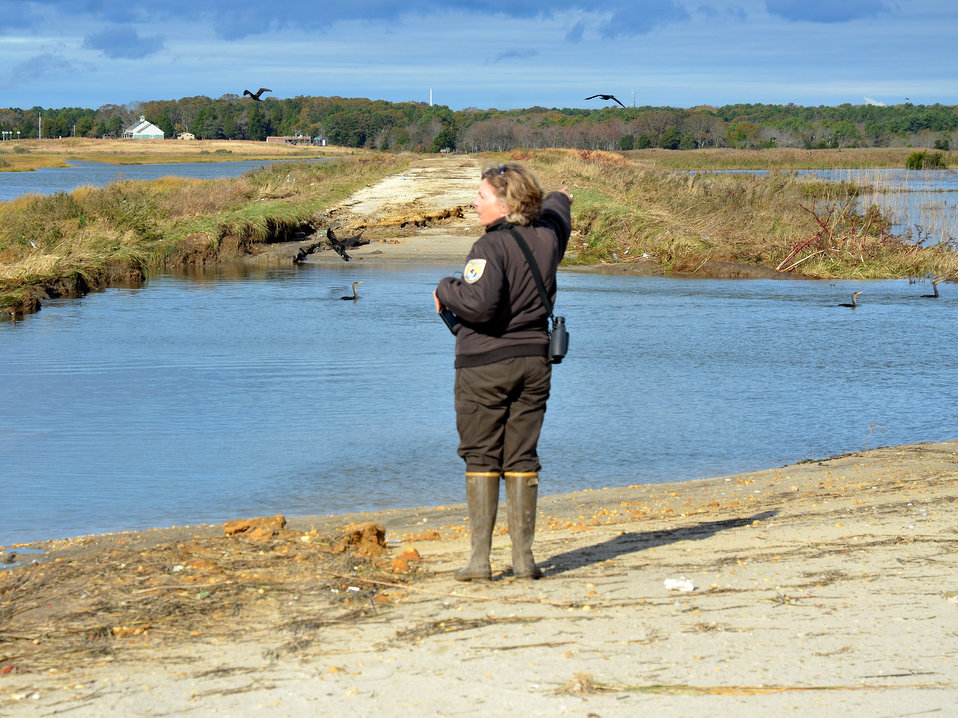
Assessing the damage (NJ)

An employee evaluates the storm damage and erosion on the south dike facing the west pool at Edwin B. Forsythe National Wildlife Refuge after Hurricane Sandy.